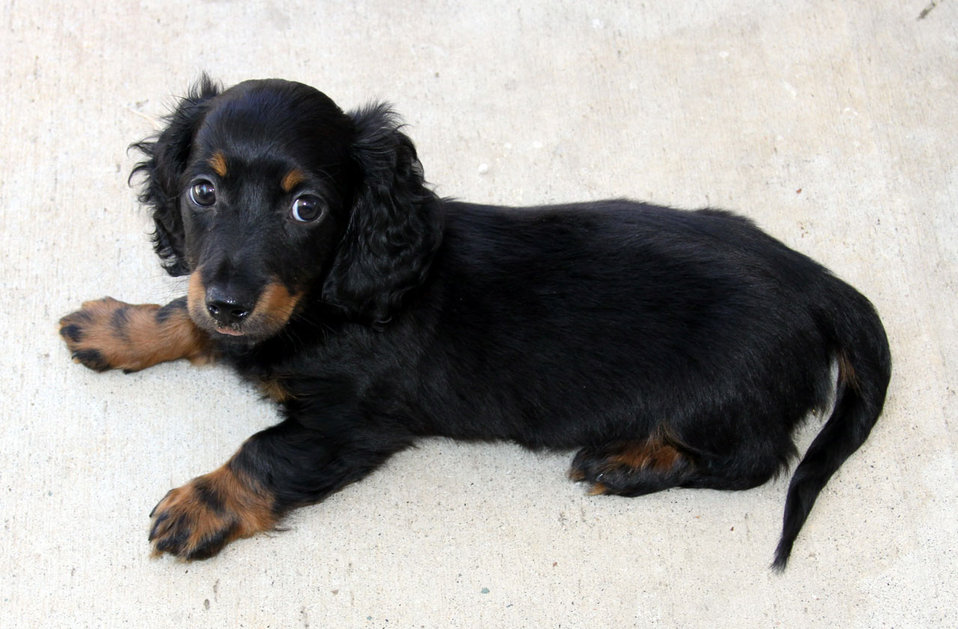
Mini longhair dachshund puppy, 8 weeks old, male.